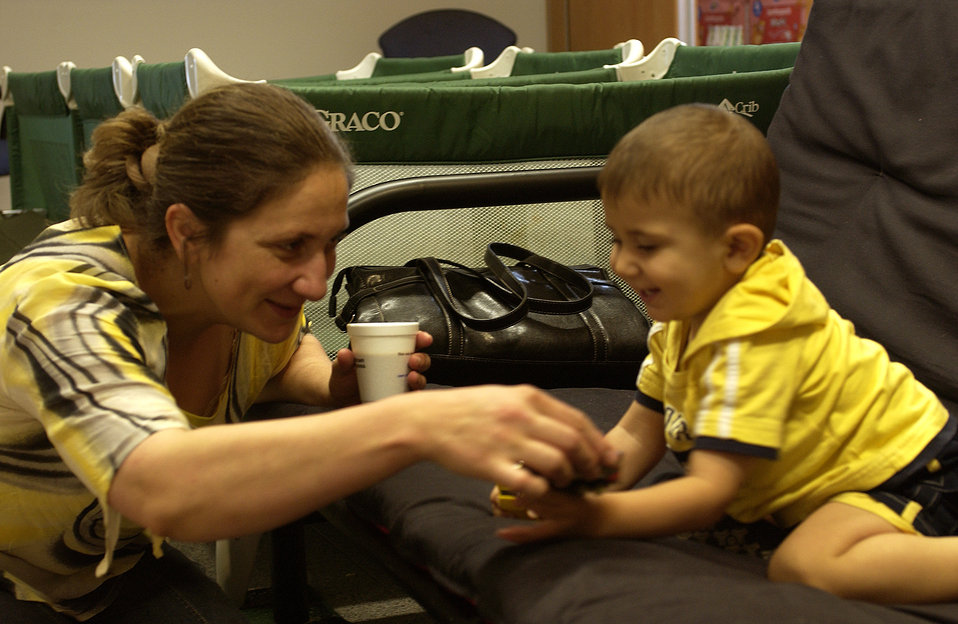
Heading to America

Wafaa Sleiman plays with her son Kareem El-Kassem at the passenger terminal at Ramstein Air Base, Germany, on July 23. Airmen at Ramstein provided humanitarian assistance for American citizens departing the Lebanon crisis on their way to the United States.